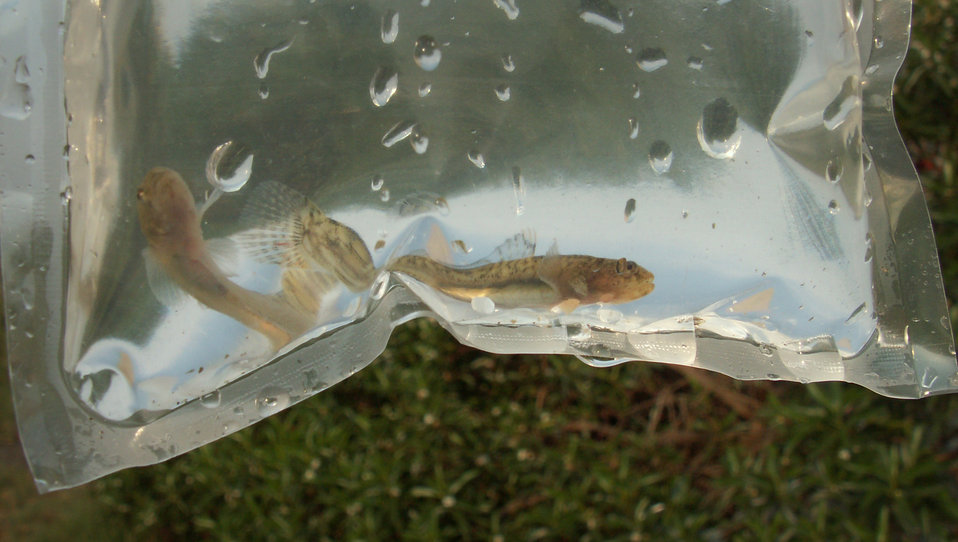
Tidewater Goby - USFWS